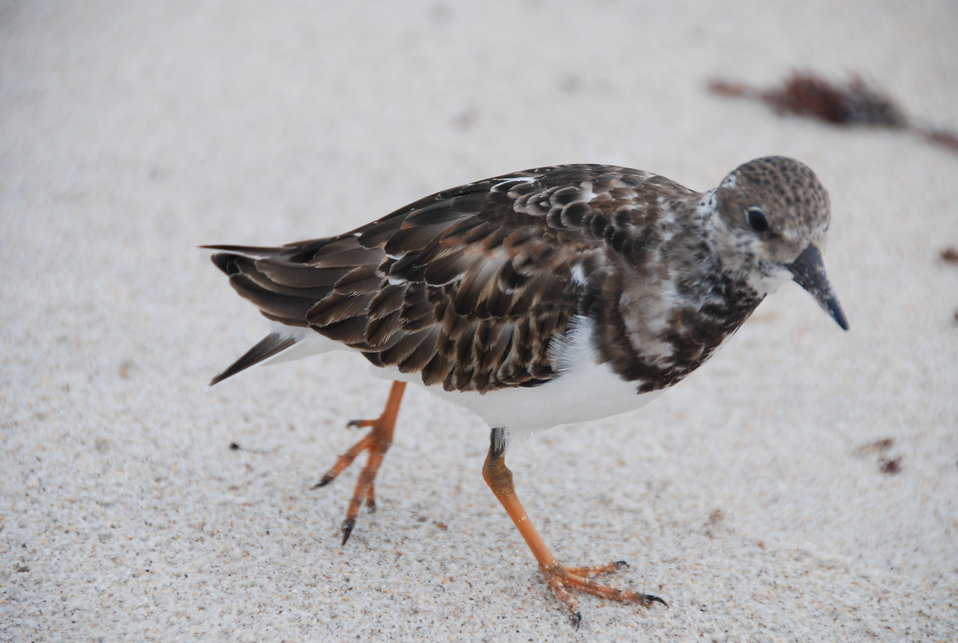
Red Knot